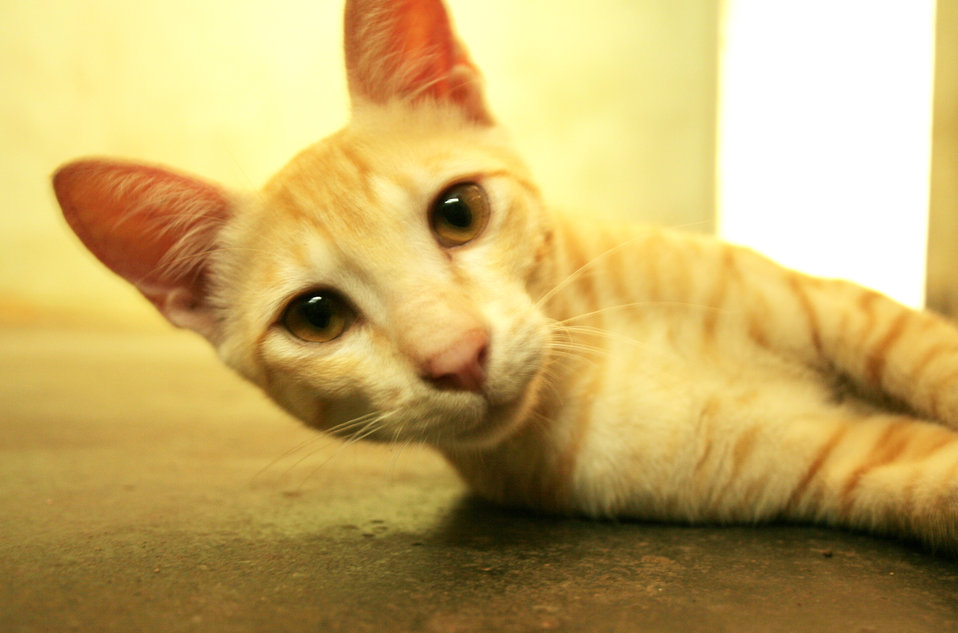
This work is dedicated to Public Domain